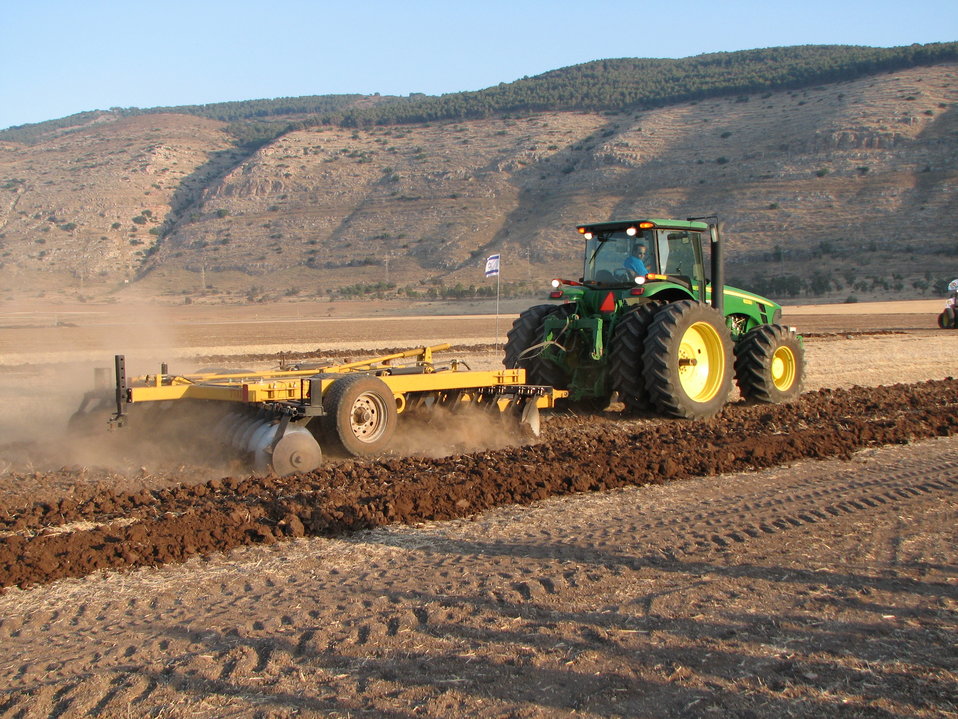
A John Deere 8330 tractor pulling a disc harrow somewhere in Israel עברית: משדדת דיסקים